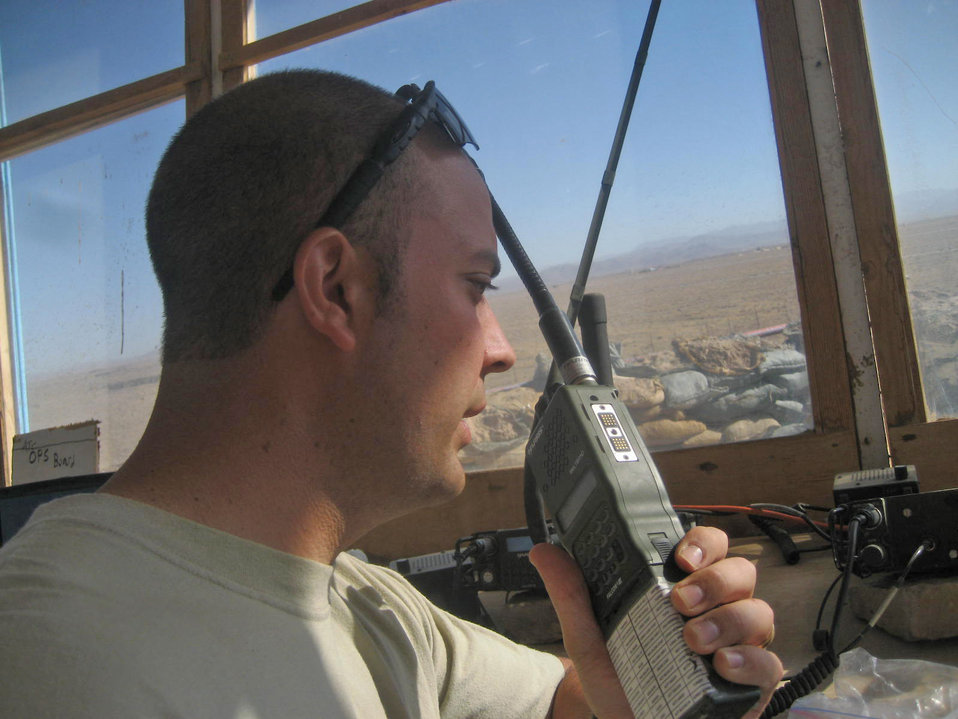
Airmen gather to develop rapid deployment tactics for operational airfield support

Staff Sgt. Michael Malpedo uses a hand-held radio to communicate with aircraft to ensure safe landing zone operations while deployed to Shindand Air Base, Afghanistan. Sergeant Malpedo is an air traffic controller with the 621st Contingency Response Wing at Joint Base McGuire-Dix-Lakehurst, N.J.